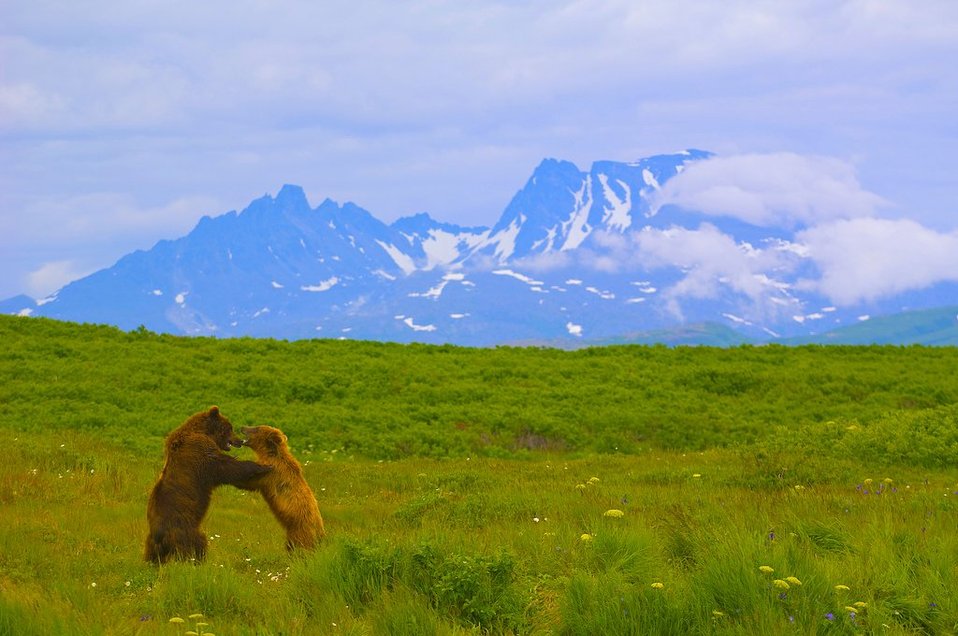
Wild Alaska

Uploaded for Flickr member threedoglight.

Two brown bears sparring near Chenik Alaska.